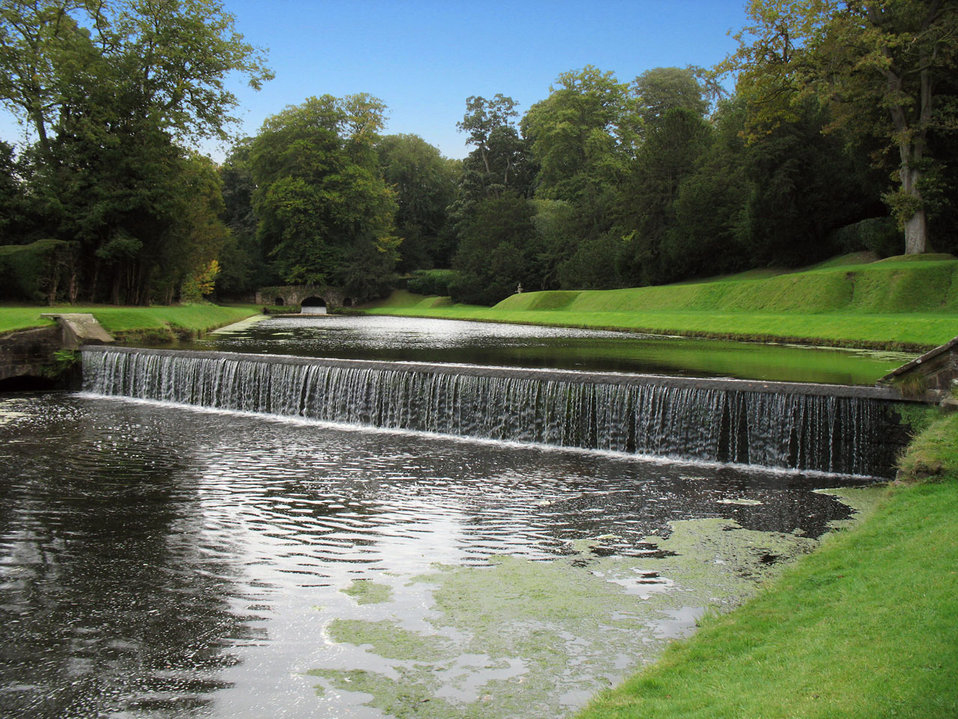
Waterfalls in fountains abbey.